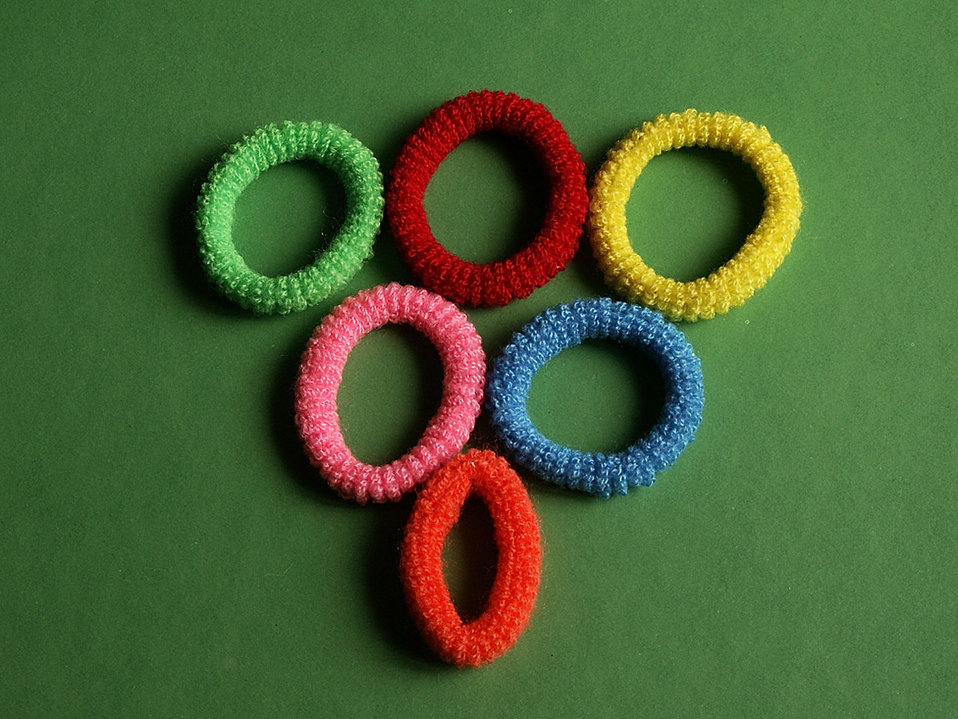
Color scrunchies

Colored hair elastics.